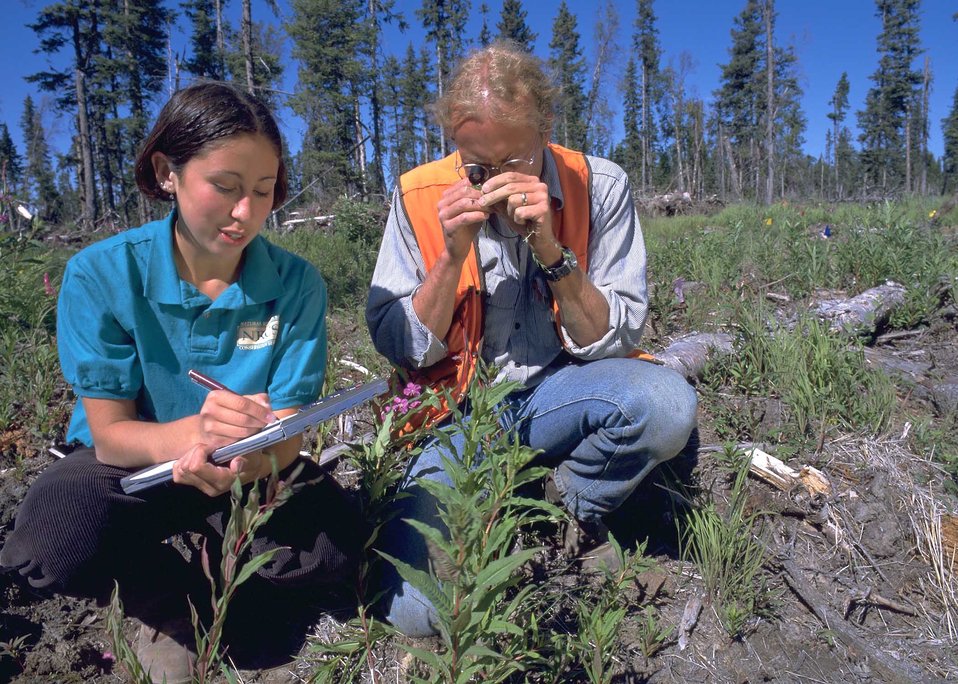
Crystal Poindexter and Mike Gracz inventory plant community on Native Alaska lands near Homer, AK.